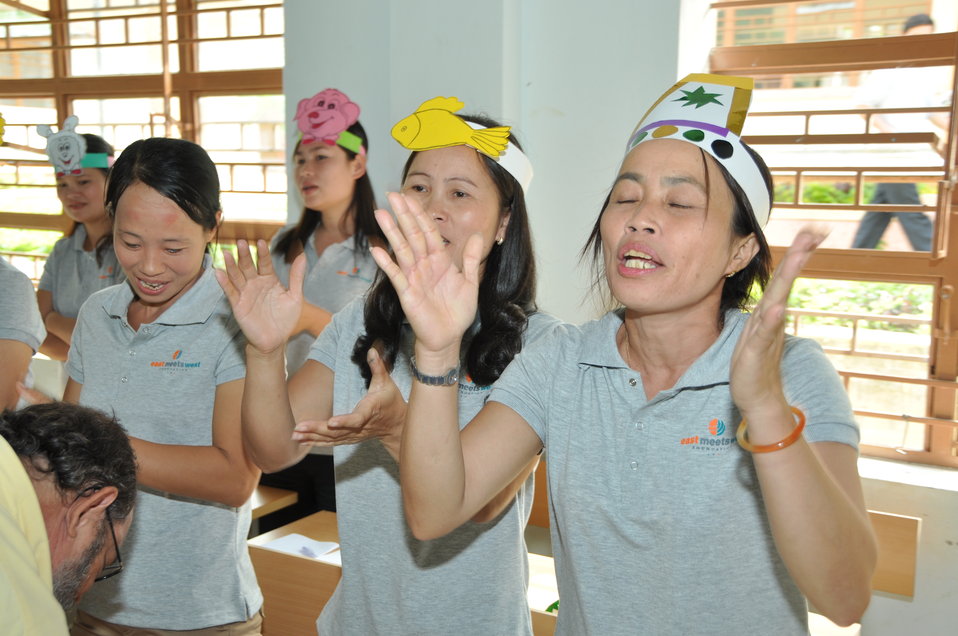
USAID and EMW support teacher training for young ethnic minority children in Kon Tum, Vietnam